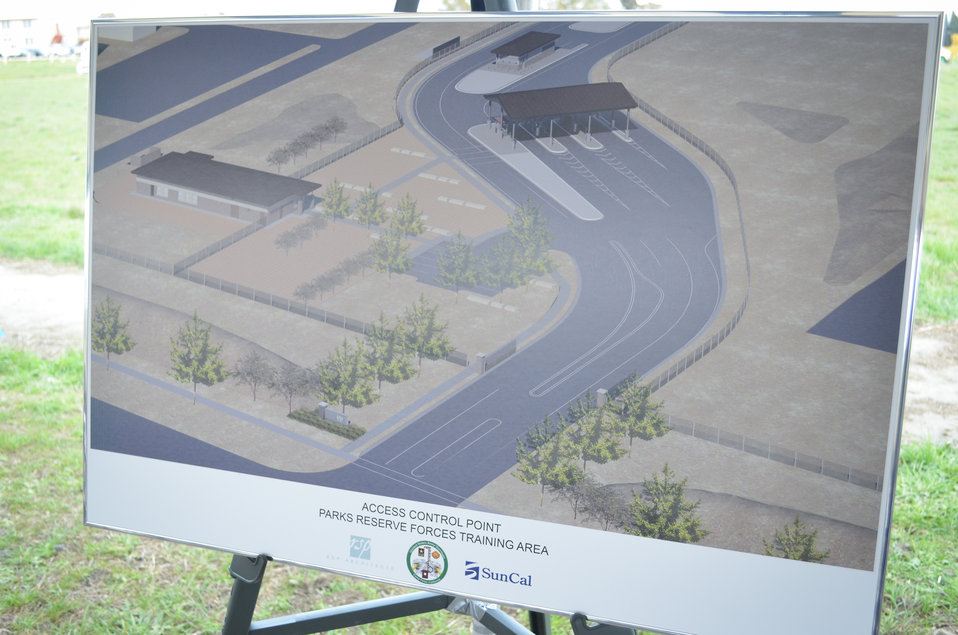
The access control point rendering

An artist's rendering conceptualizes the new access control point for the U.S. Army Garrison Camp Parks Reserve Training center in Dublin, Calif., The access control point will include a modernized main gate; a 4,300-square-foot administration/police department building; a 1,200-square-foot visitor center; and a mail room. The first phase is expected to be completed and operational by April 2014.
The U.S. Army Corps of Engineers Sacramento District's real estate office is overseeing a 180-acre transfer of land in exchange for an estimated $66 million in modern facilities for Camp Parks over the next several years—the largest Army Reserve real property exchange agreement in Department of Defense history.